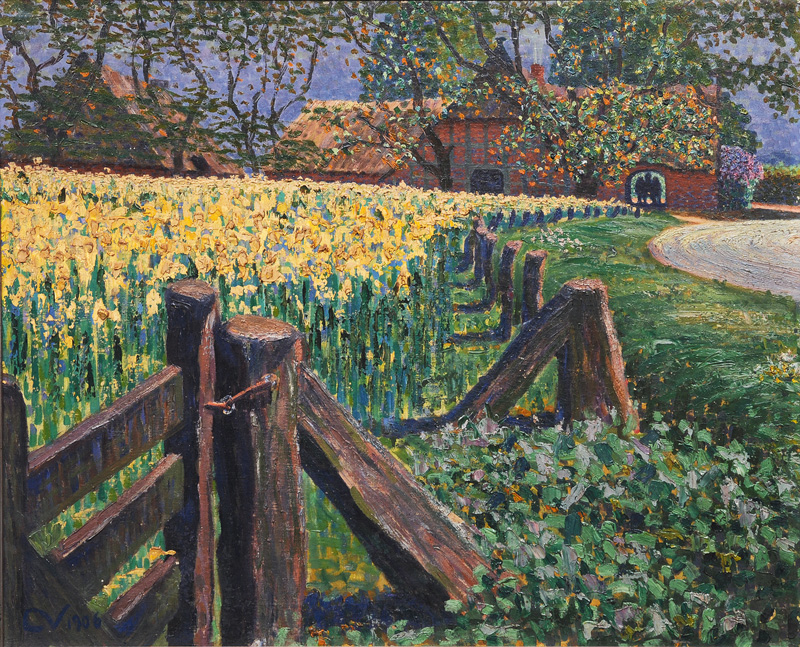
Sommer in Worpswede. Öl auf Leinwand, 57 x 70,5 cm, monogrammiert und datiert CV 1906